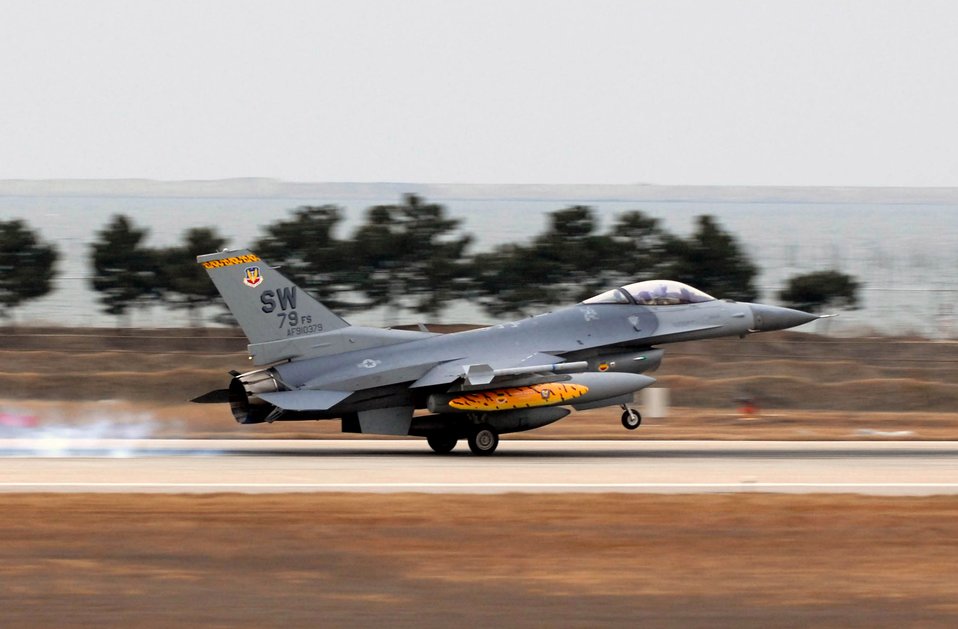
Falcon comes to nest in Kunsan

Lt. Col. Donald Butler touches down his F-16 Fighting Falcon Jan. 15 at Kunsan Air Base, South Korea. Colonel Butler is the 79th Fighter Squadron commander from Shaw Air Force Base, S.C. More than 300 Airmen and several aircraft from the 79th FS are in South Korea as the squadron's air and space expeditionary force deployment to help maintain peace and stability in the Pacific region.